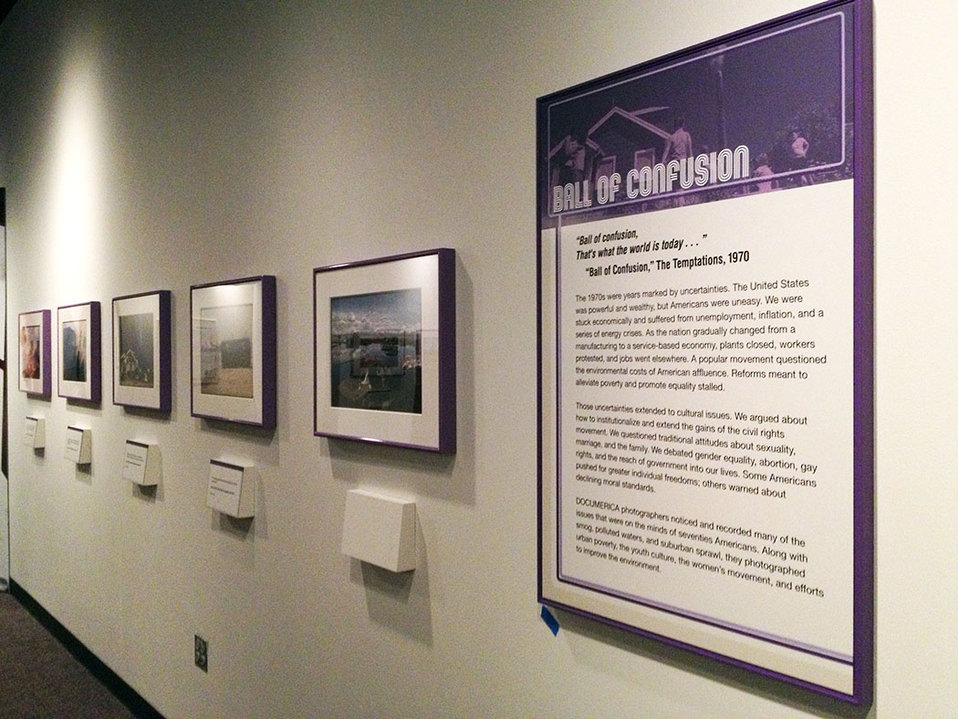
Documerica Photos and Graphic

Exhibit graphics are installed for the 'Searching for the Seventies' exhibit in the O'Brien Gallery.